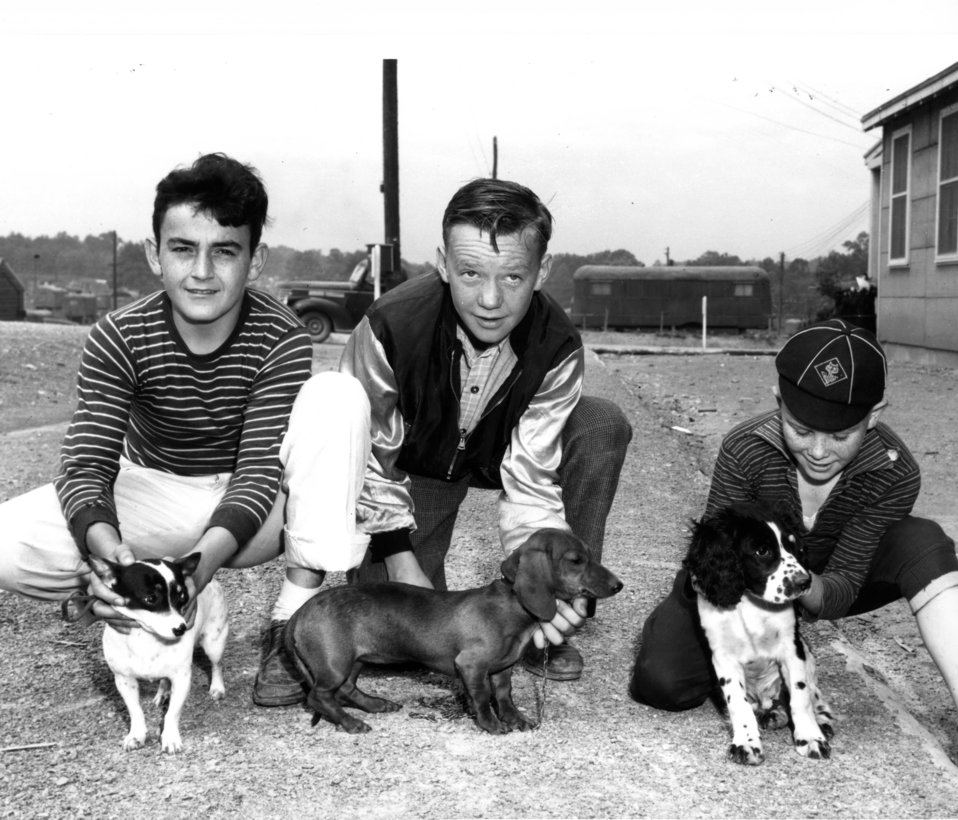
Recreation at Oak Ridge